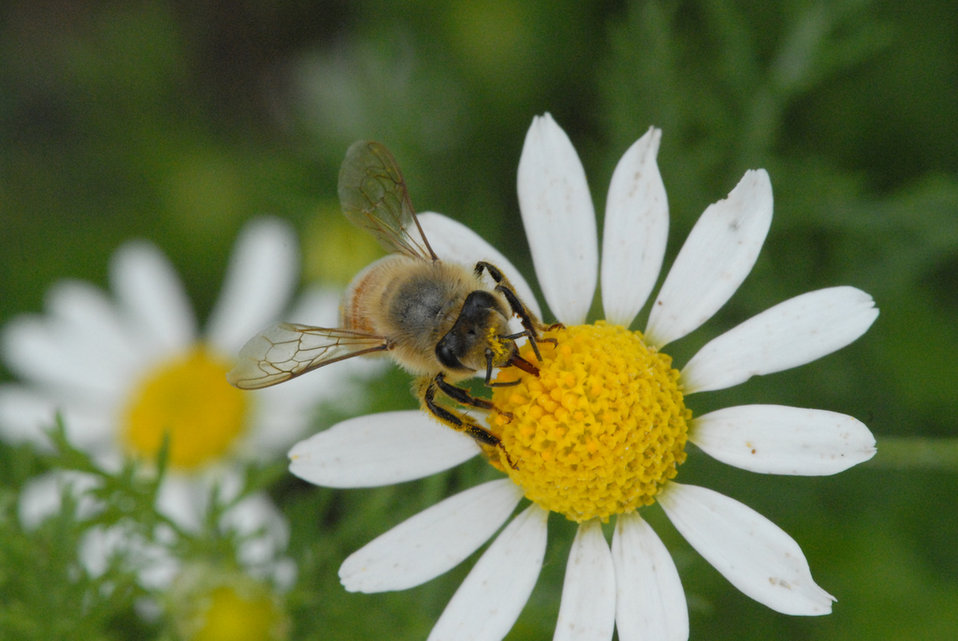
bee on daisy

Ridgefield National Wildlife Refuge, WA